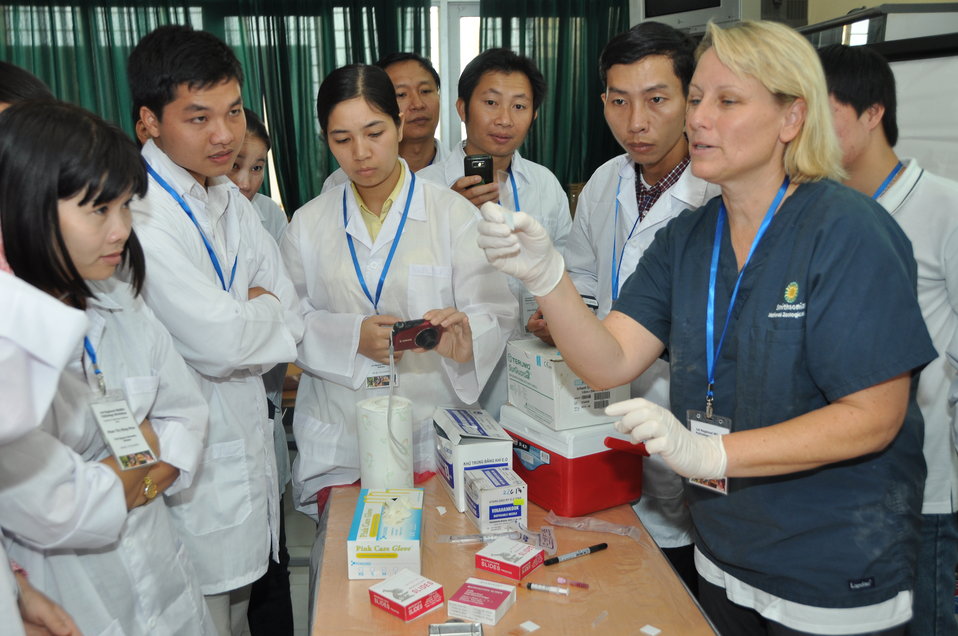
USAID EPT Smithsonian Pathology Training to Detect Emerging Infectious Diseases Wildlife and Other Animals in Vietnam Workshop